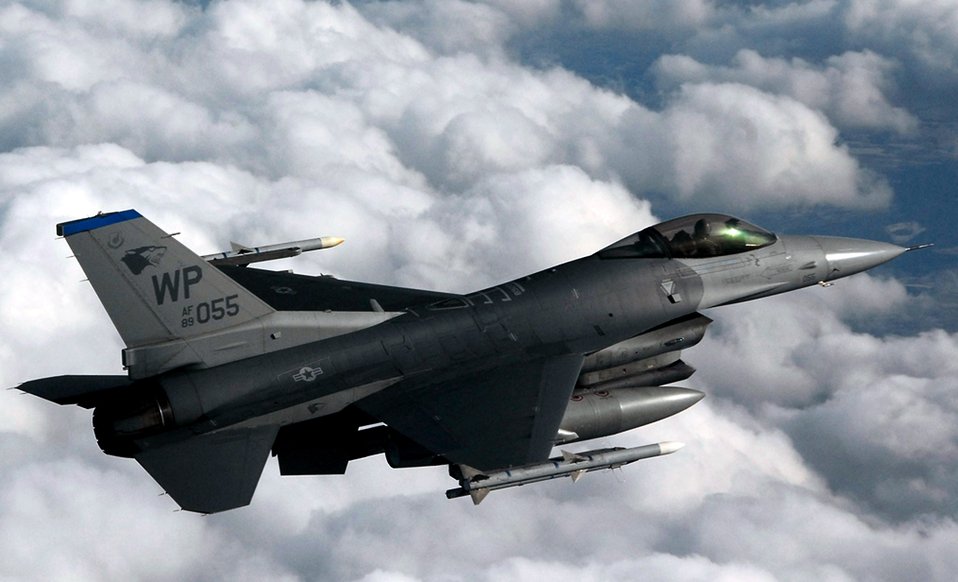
Falcons fly over South Korea

An F-16 Fighting Falcon flies a training mission Jan. 30 over the South Korean peninsula. The F-16 can fly more than 500 miles, deliver its weapons with superior accuracy, defend itself against enemy aircraft, and return to its starting point. Pilots assigned to the 35th Fighter Squadron from Kunsan Air Base, South Korea, use training missions to simulate actual conditions they may face in combat and keep their warfighting skills honed.